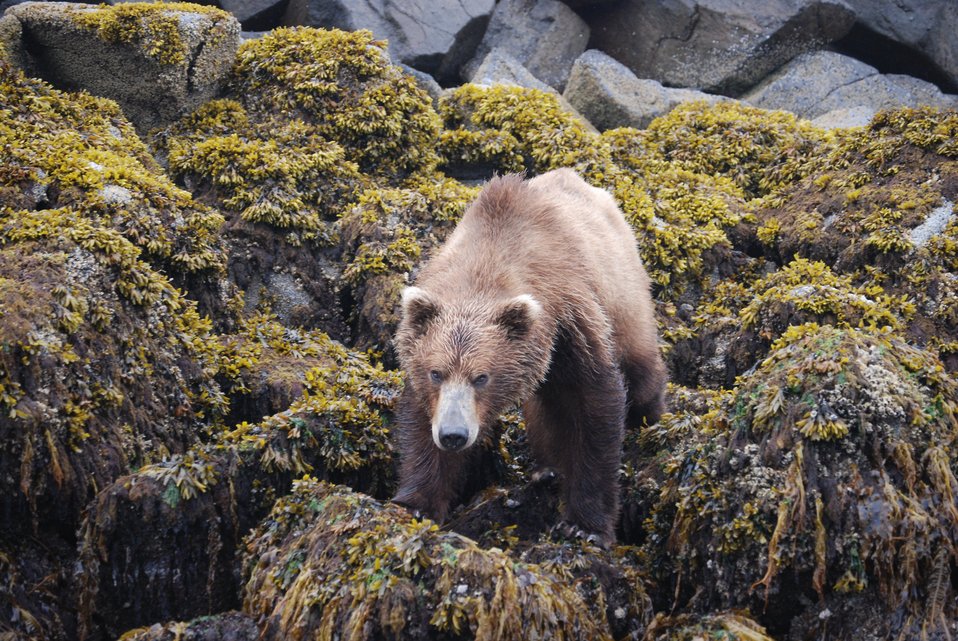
This marine fauna wasn't in the textbooks I read. Alaska Brown Bear (Ursus arctos). Tidepooler's nightmare.